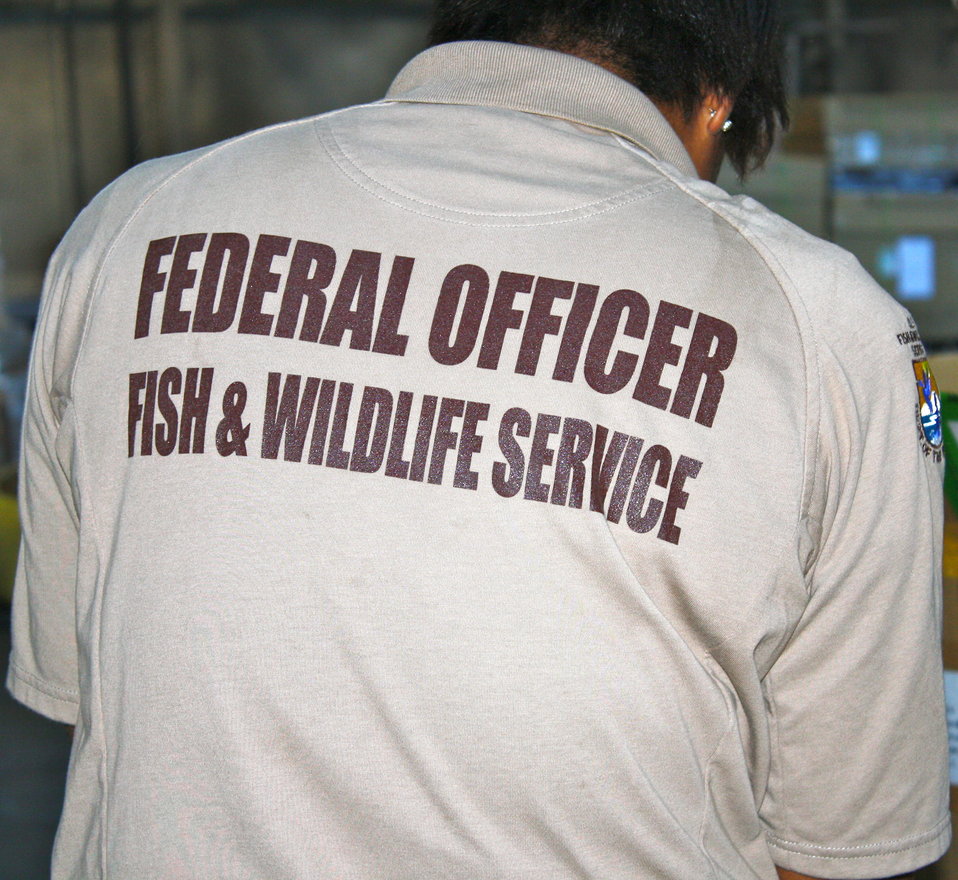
Wildlife Inspector - Federal Officer Shirt

Wildlife Inspectors are uniformed federal officers stationed at wildlife ports of entry around the country.